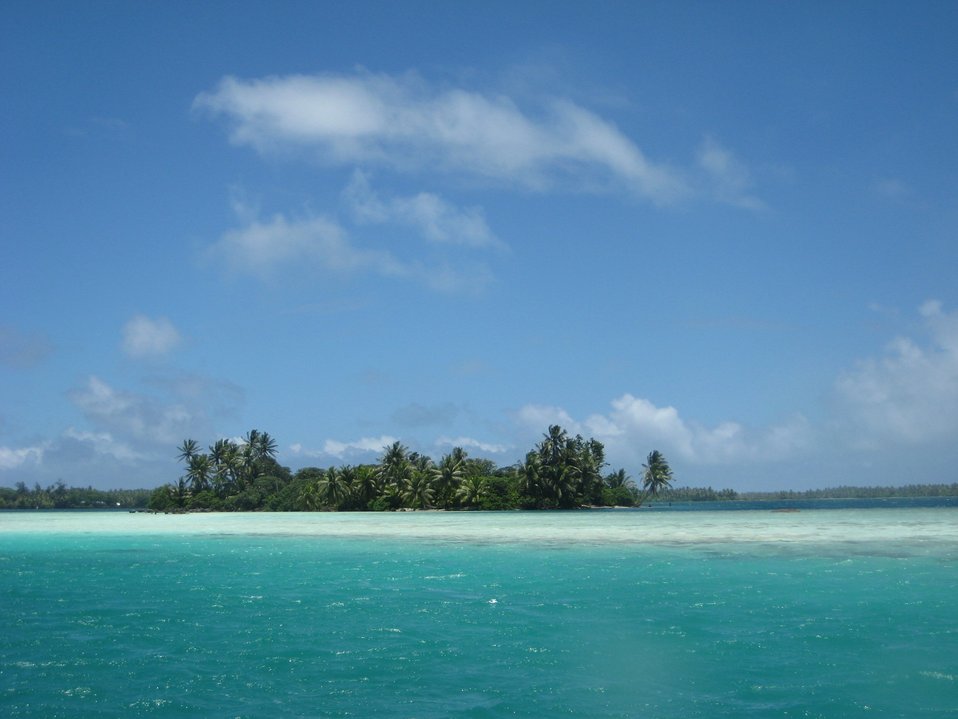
In the shallow aquamarine waters of the lagoon at Palmyra Island.